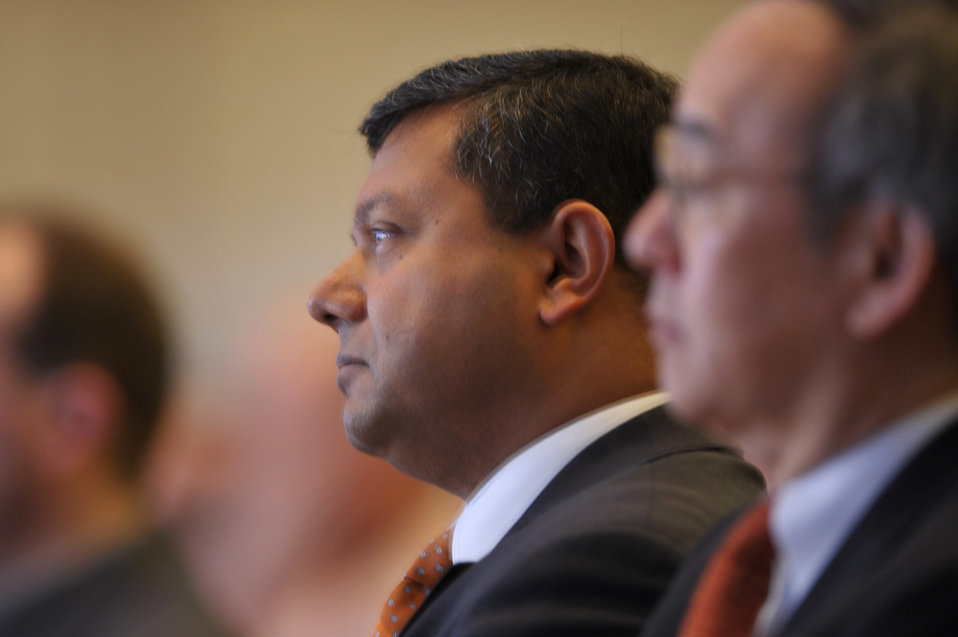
ARPA-E Energy Innovation Summit 2011, 64 of 83

Steven Chu, Secretary, United States Department of Energy and Dr. Arun Majumdar, Director, ARPA-E watch Senator Mark Udall (D-CO) speak Tuesday morning.